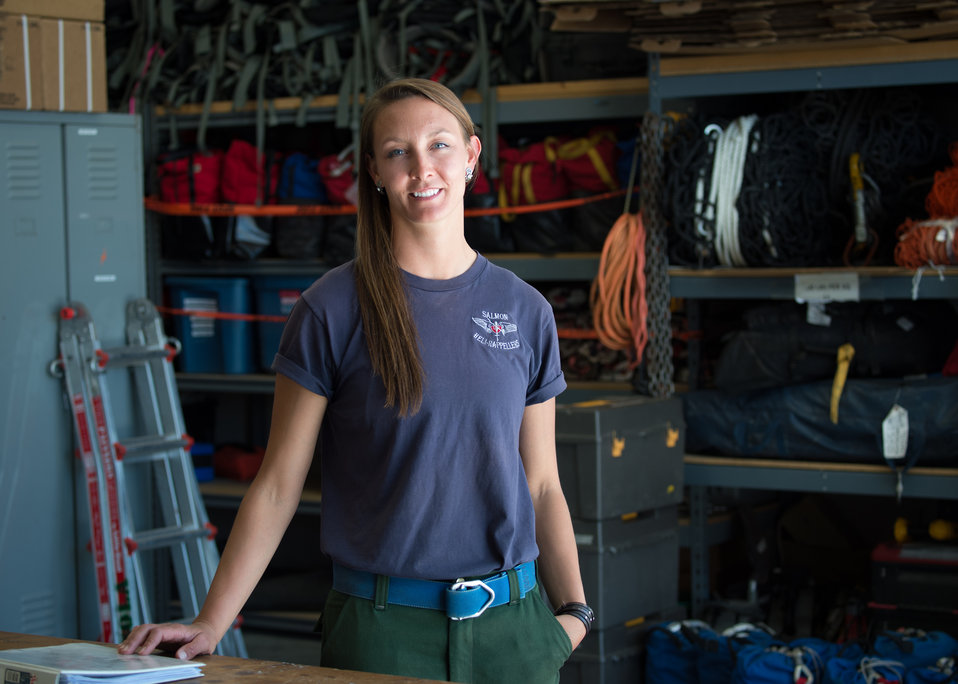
Chief Manifest Specialist Jessica Martin is in charge of ensuring the right veteran wildland firefighter rappeller is assigned with the helicopters, spotters and evaluators that they need to train and become recertified at the U.S. Department of Agriculture (USDA) U.S. Forest Service (USFS) National Helicopter Rappel Program’s Rappel Academy at Salmon Air Base in Salmon, ID on Wednesday, May 14, 2014. From May 12, 2014, 72 veteran rappellers from all over the nation, 30 support staff, and three helicopters with flight crews attend the training at Salmon Air Base. Participants will rappel into the Perreau Creek area. The annual training is delivered in accordance with the National Rappel Operations Guide; strengthen leadership, teamwork, and communications within the rappel community, and produces quality aerial delivered firefighters for use in fire and aviation operations. The USDA Forest Service National Helicopter Rappel Program’s primary mission is initial attack. Rappel crews may be utilized for large fire support, all hazard incident operations, and resource management objectives.